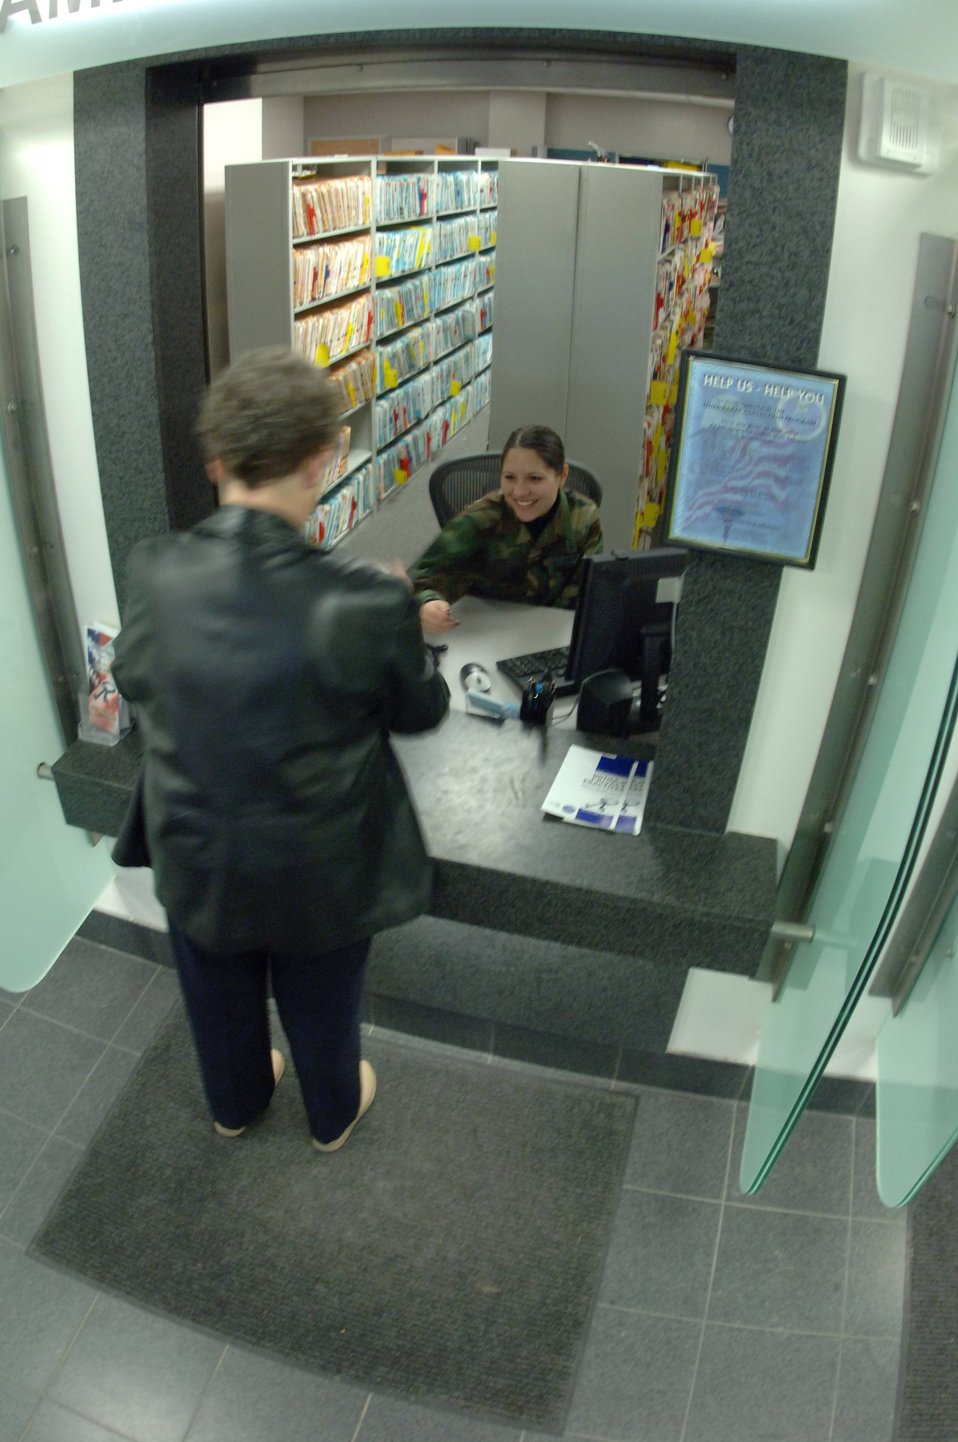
Academy hospital tops in class

Staff Sgt. Dana Reyes checks Mary Stephenson in Feb. 6 for her morning appointment at the Air Force Academy hospital. The Academy hospital was awarded the Defense Department's Medical Treatment Facility Patient Satisfaction Award for fiscal year 2006. Sergeant Reyes is a family practice technician with the 10th Medical Group.